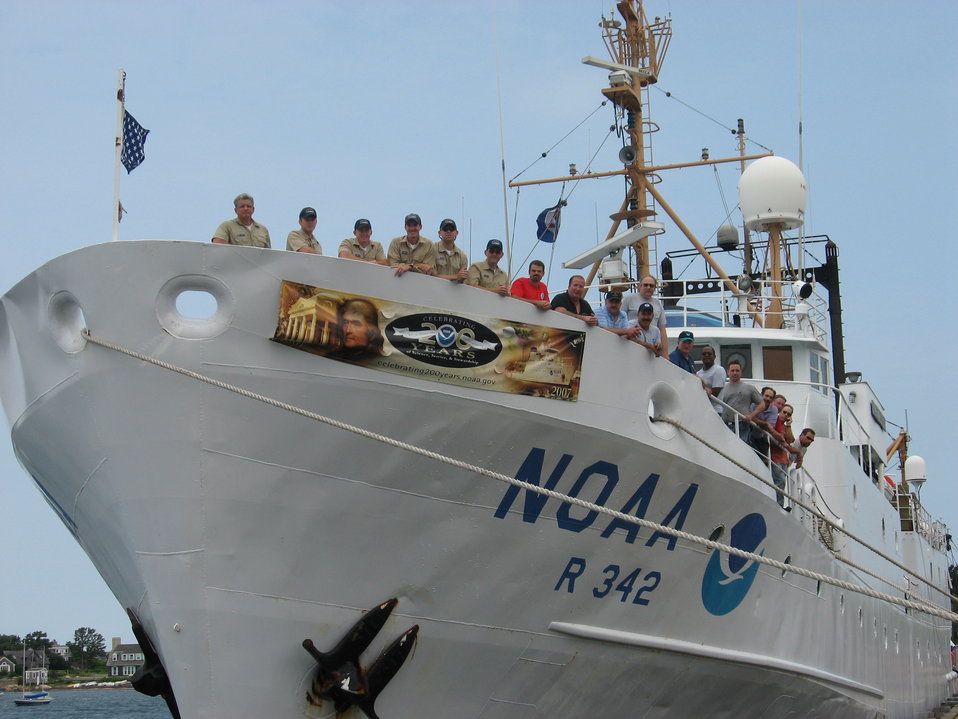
The Officers and Crew of NOAA Ship ALBATROSS IV wish all of NOAA a happy 200 Years of Science and Service to our Nation. The ALBATROSS provides operational support to the Northeast Fisheries Science Center as a fisheries research platform. Master Stephen Wagner on left.